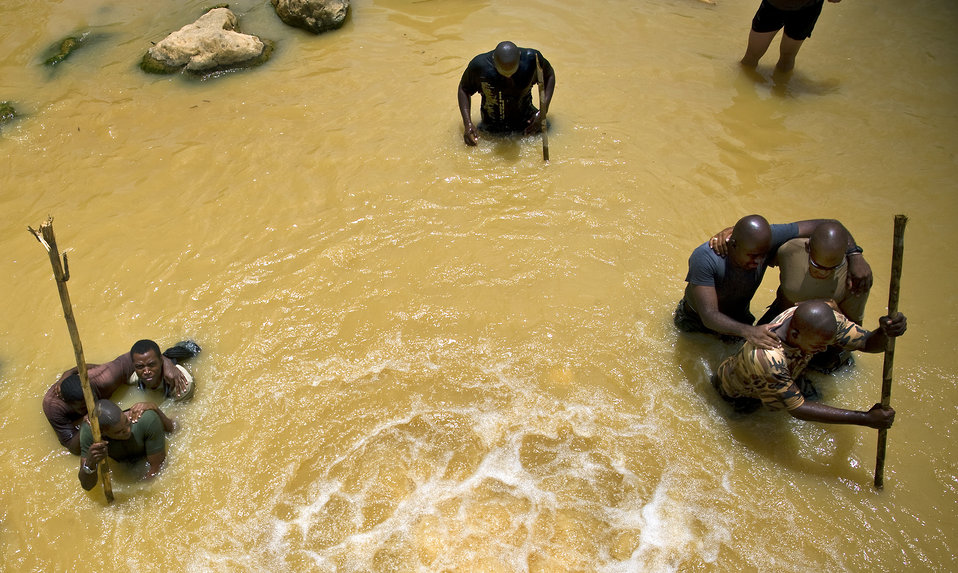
Operation Southern Partner

Members of the Royal St. Lucia Police Force's Special Service Unit practice swift-water rescue procedures June 5 that were taught by U.S. Air Force pararescuemen during Operation Southern Partner in La Toc, St. Lucia. Operation Southern Partner is a long-term commitment between U.S. and partner nations to share experiences, information, vital skills, tactics and techniques in preparation for future regional challenges that require cooperative solutions.